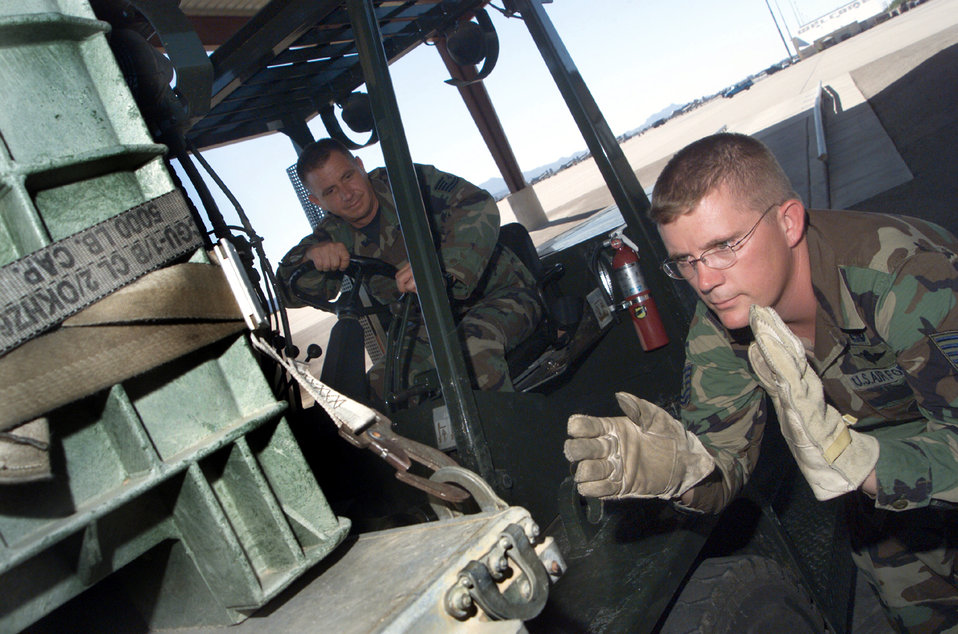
Taking care of business

DAVIS-MONTHAN AIR FORCE BASE, Ariz. -- Tech. Sgt. Jordan Grice (right) spots Tech. Sgt. Rhett Pryor as he places a pallet onto a 60K loader. Both sergeants are assigned to the 355th Logistics Readiness Squadron here.